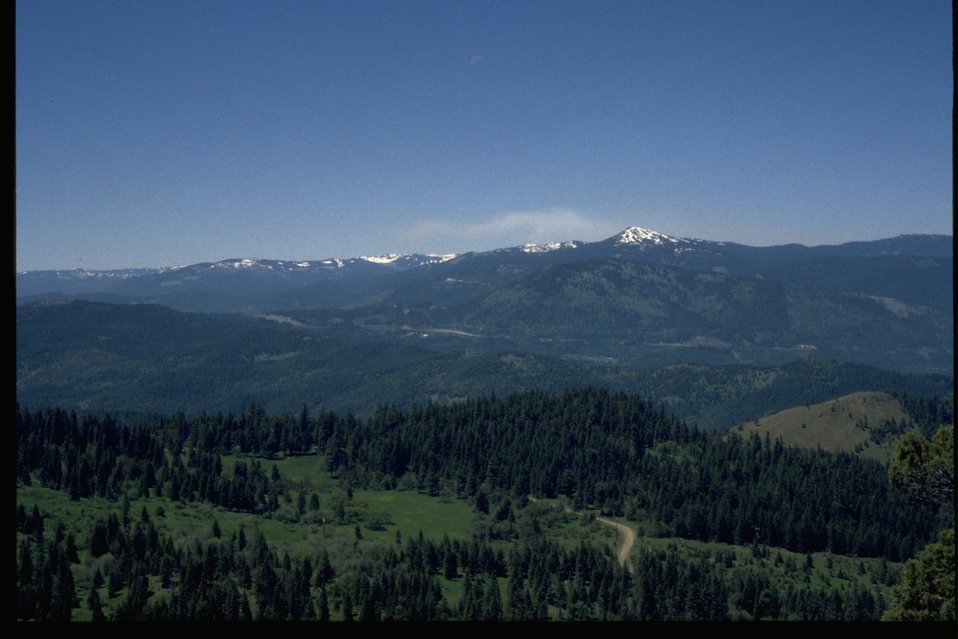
Jenny Creek LSR from Hobart Bluff, view west toward Mount Ashland.